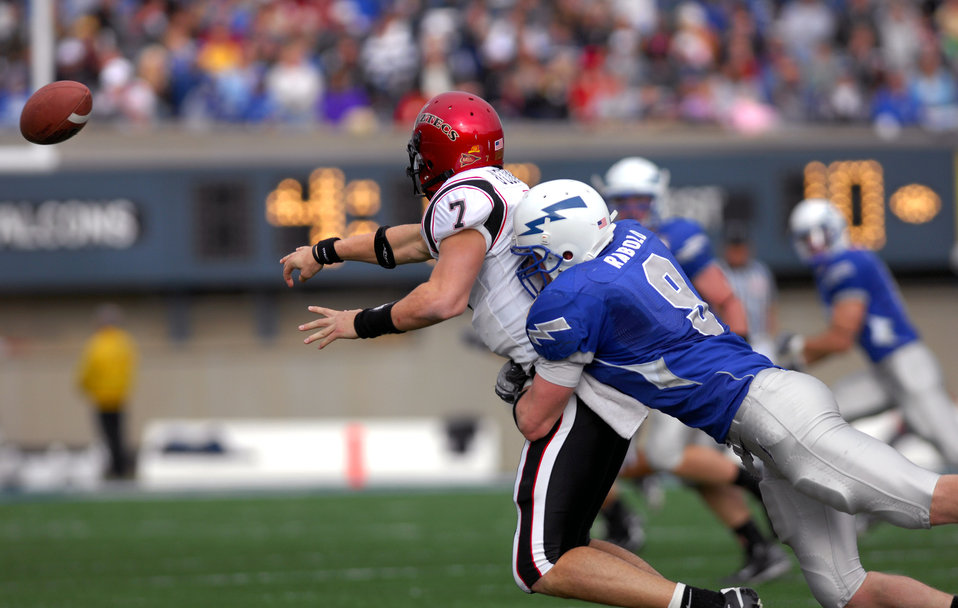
Football: Bowl-bound Falcons dominate regular season finale

Falcon linebacker John Rabold wraps up San Diego State quarterback Kevin O'Connell as he pitches the ball during Air Force's 55-23 win over the Aztecs Nov. 17 at the Academy's Falcon Stadium. Rabold forced and recovered a fumble.